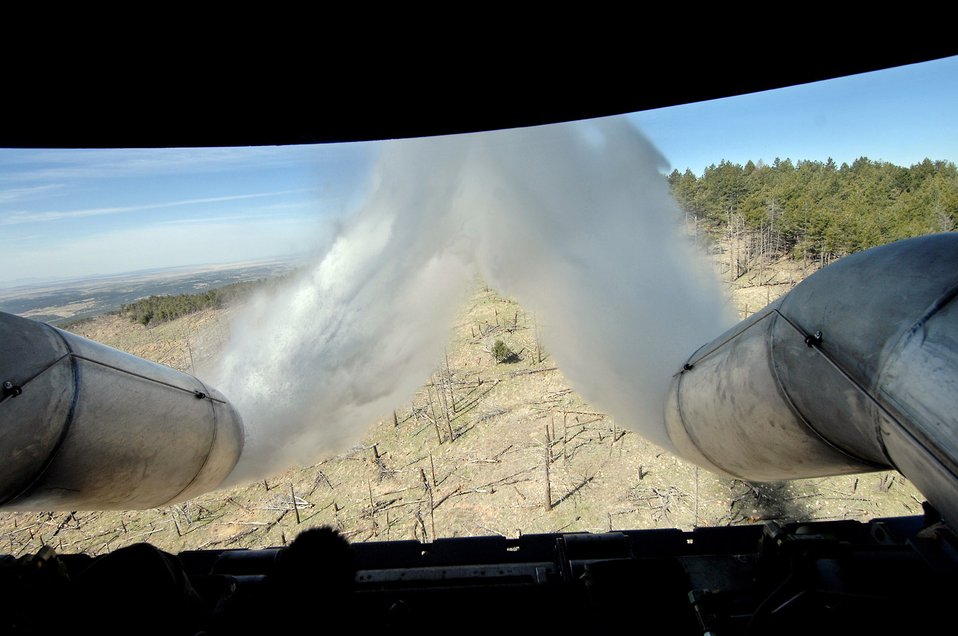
Reserve C-130s helping fight California fires

Two Air Force Reserve Command C-130 Hercules aircraft, equipped with Modular Airborne Firefighting Systems like this C-130 dropping water during annual MAFFS training in New Mexico, have been dispatched to help battle wildfires in California. The aircraft are from the 302nd Airlift Wing at Peterson Air Force Base, Colo.